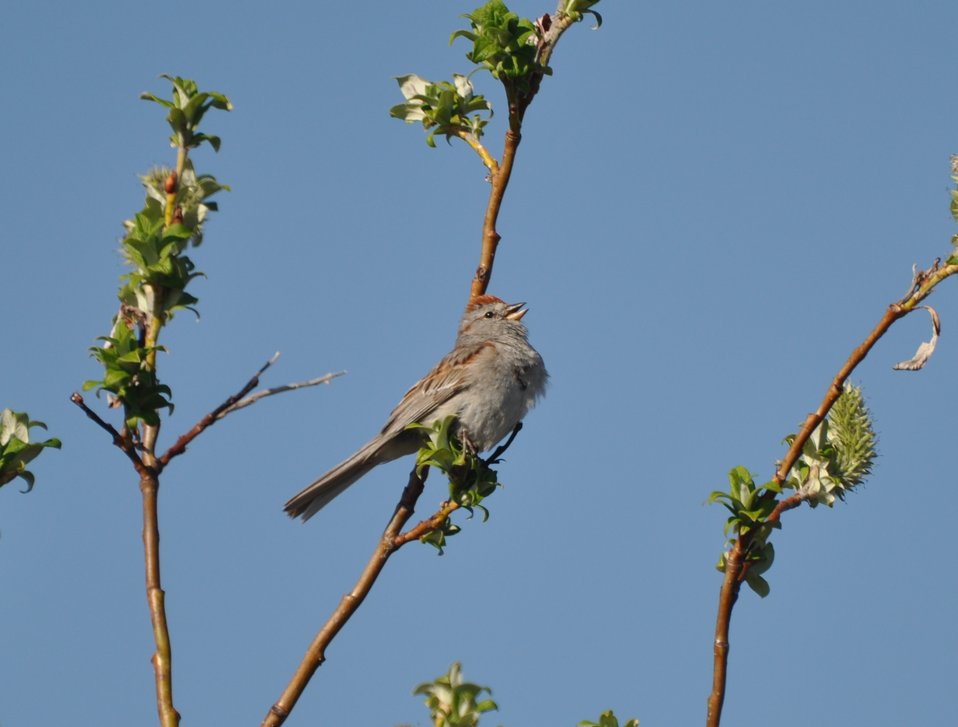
American Tree Sparrow

Andreafsky wilderness, Yukon Delta National Wildlife Refuge